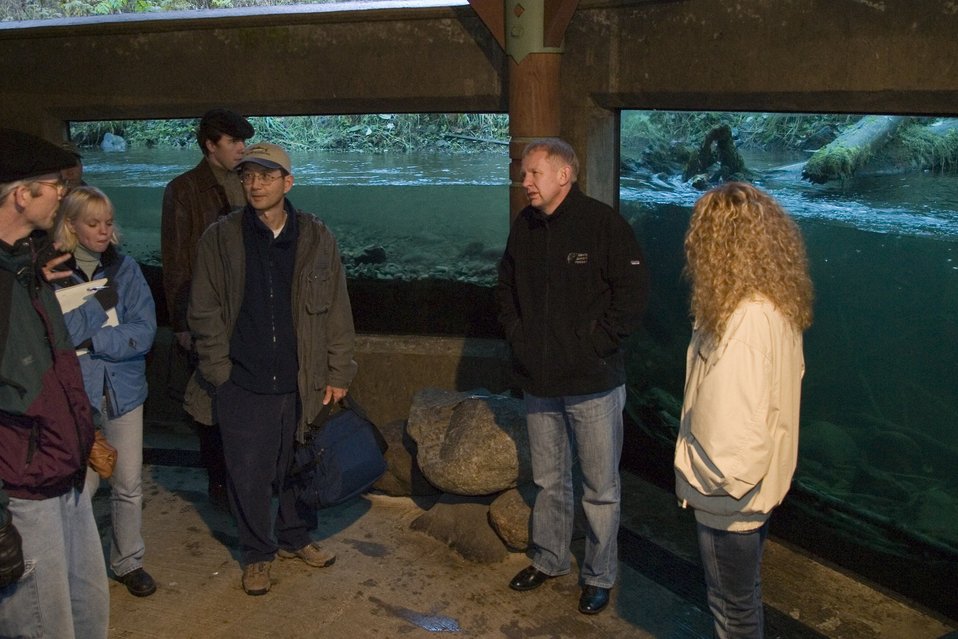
Joe Moreau, BLM Fish Biologist, talks about the fish viewing structure at BLM's Wildwood Recreation site to Alexander Chistyakov, Vice-Governor of Kamchatka, Oksana Rudenko Kamchatka Regional Administrator and others in the Wild Salmon Center.